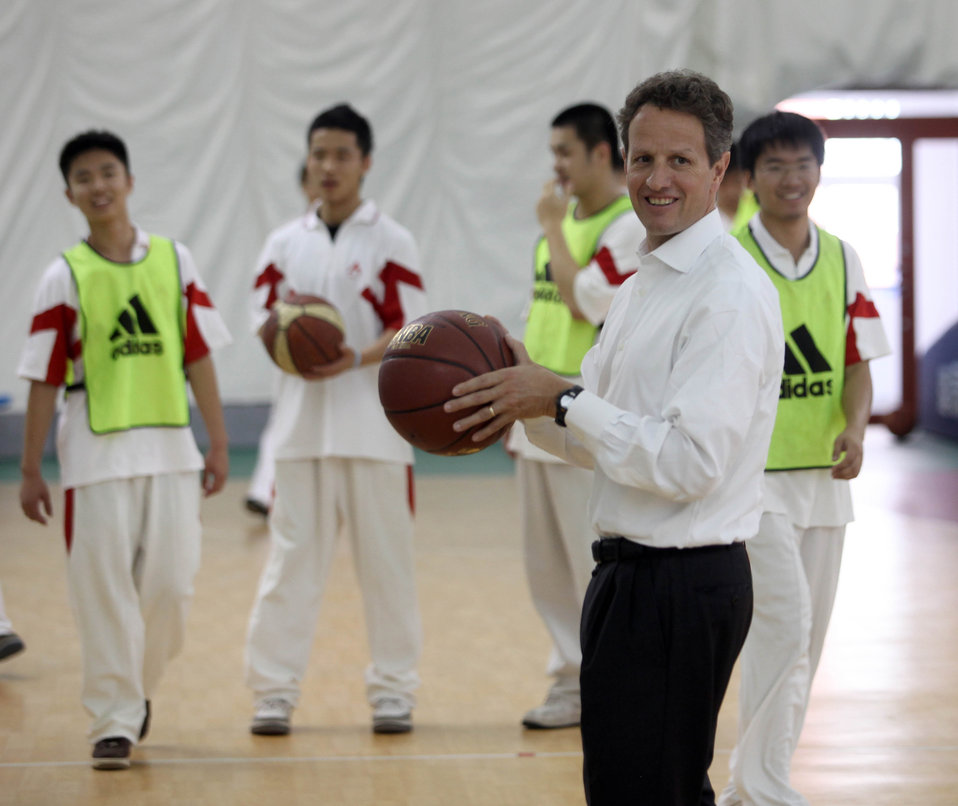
SandED, 5/23/10

Secretary Geithner joins team members from the Renmin University High School basketball team for practice Sunday, May 23 in Beijing.